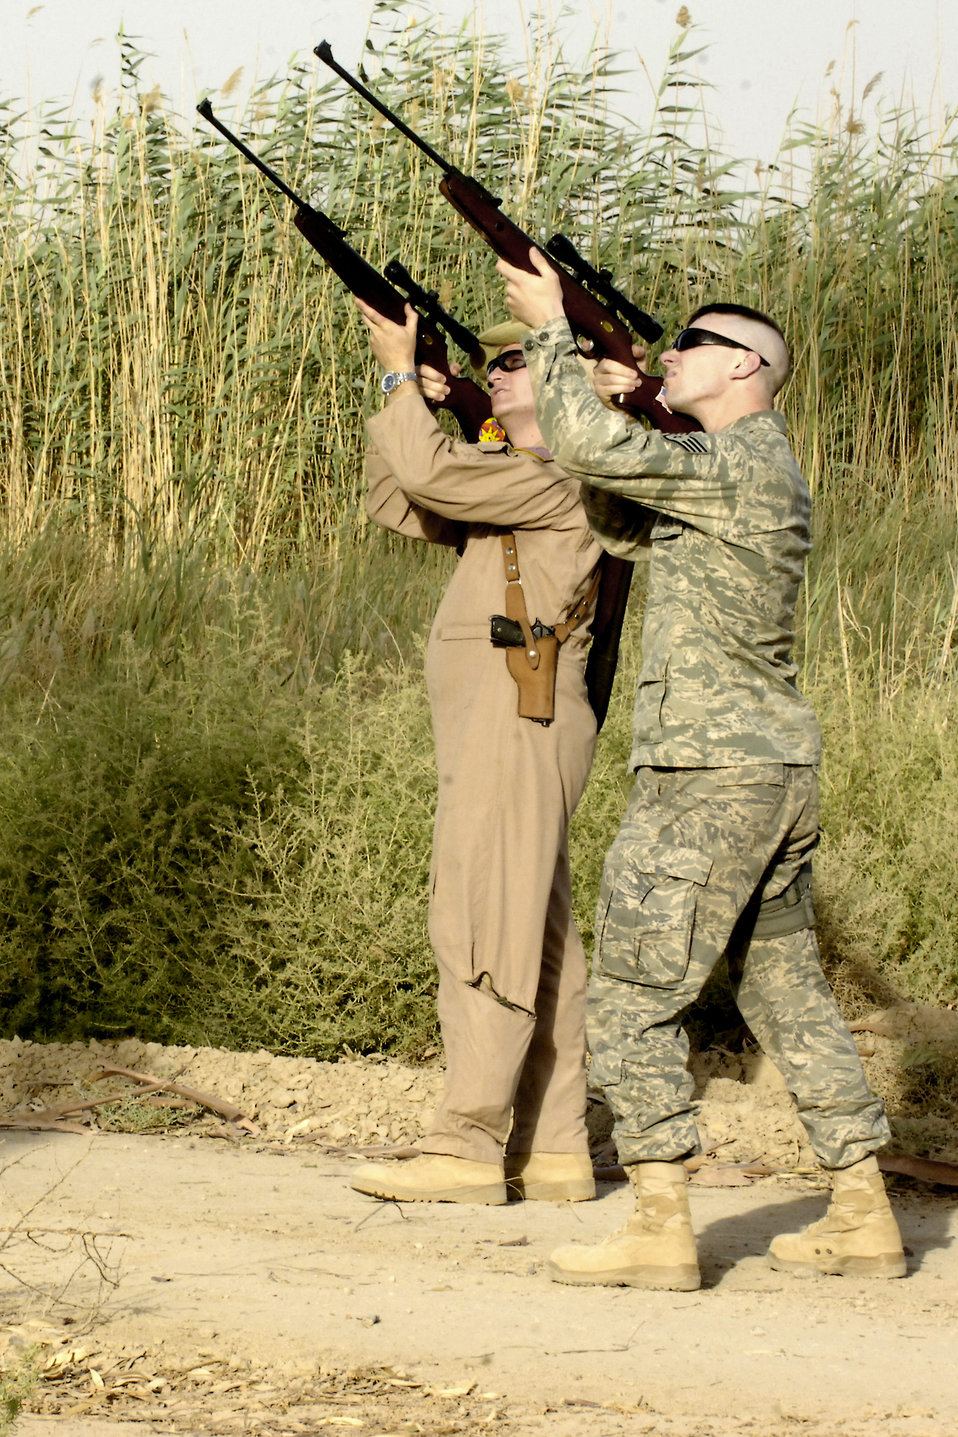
BASH program

Maj. David Aumack and Staff Sgt. Levi Riendeau take aim at a bird June 3, 2011, as part of the Bird/Wildlife Aircraft Strike Hazard program at Baghdad International Airport. The BASH program is designed to reduce wildlife hazards by keeping birds and other animals away from runways and planes. Major Aumack is a flight safety officer assigned to the 321st Air Expeditionary Wing. Sergeant Riendeau is a photographer assigned to the 321st AEW.